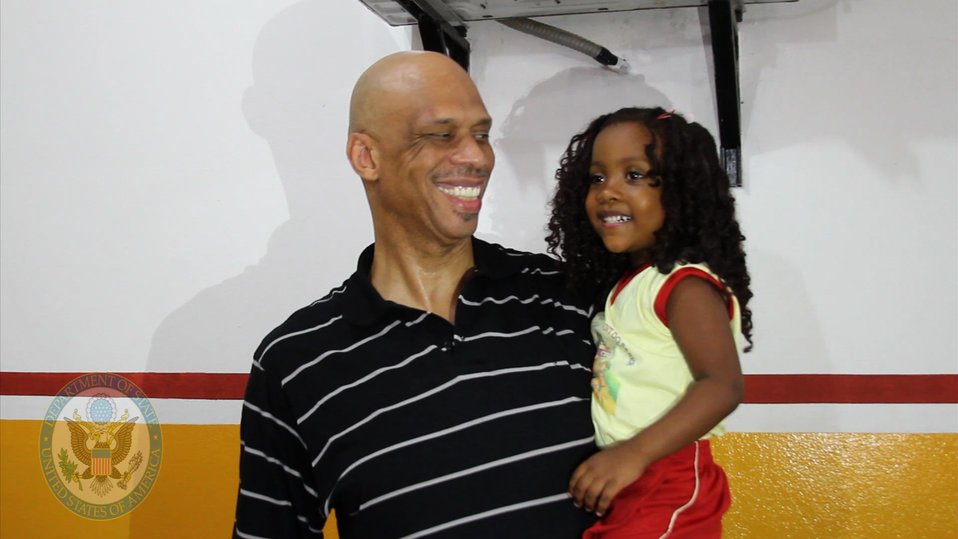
Cultural Ambassador Kareem Abdul-Jabbar Engages Youth

Hall-of-Famer and Global Cultural Ambassador for the U.S. Department of State Kareem Abdul-Jabbar engages youth in Salvador, Brazil, on January 24, 2012.